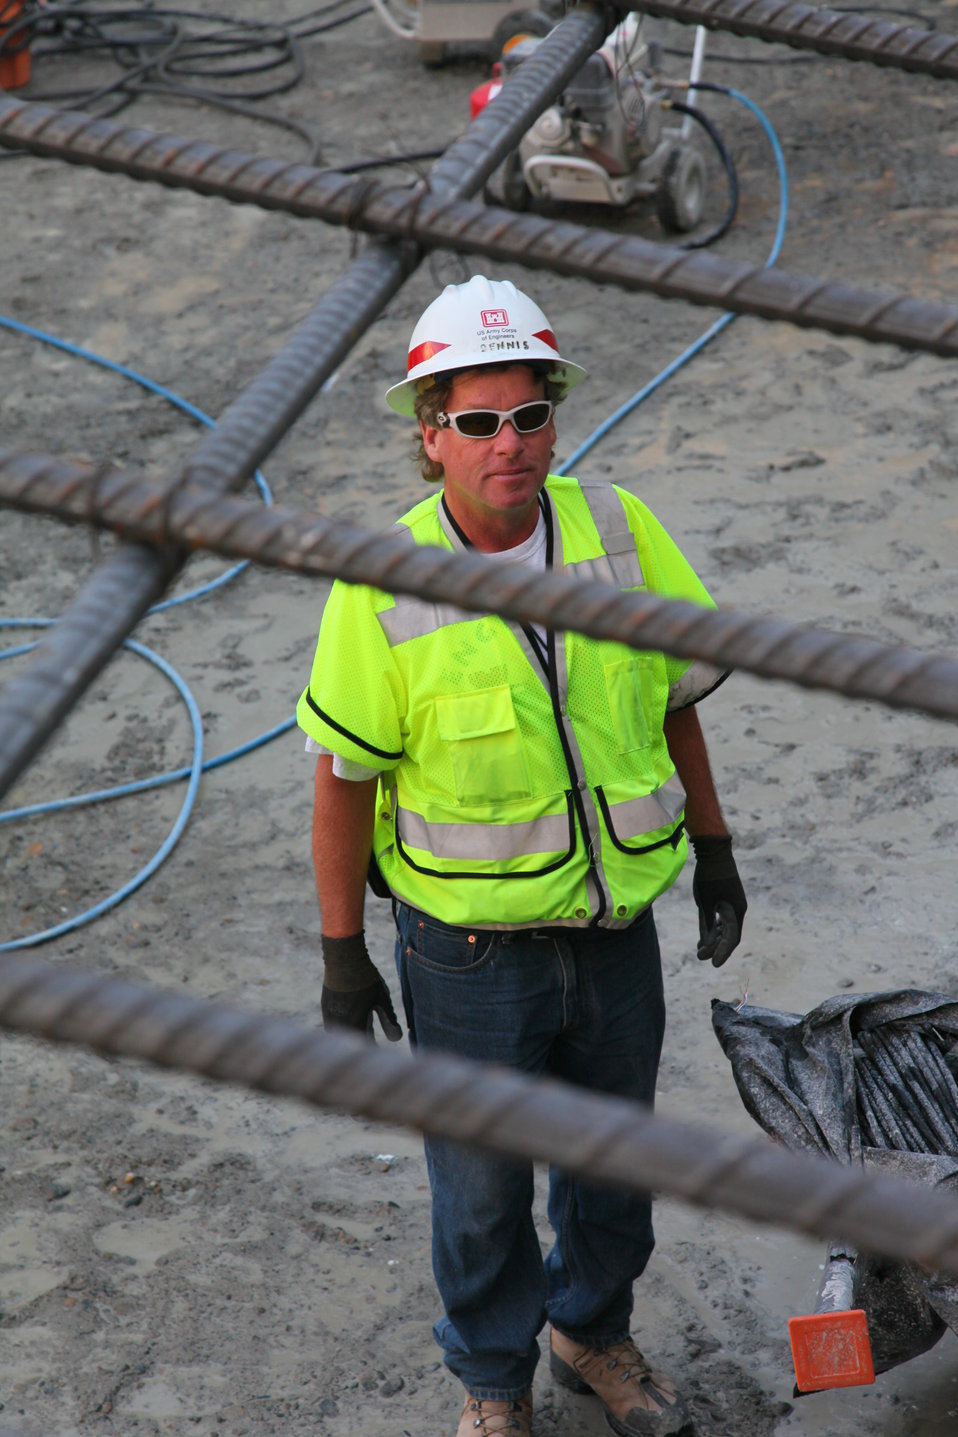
Rebar before concrete

Looking up in a maze of a steel rebar, Dennis Griffin, a construction representative with the U.S. Army Corps of Engineers Sacramento District, examines the support system for concrete placement for the auxiliary spillway at the Folsom Dam Joint Federal Project in Folsom, Calif., June 14, 2012. The Folsom Dam Joint Federal Project is a joint effort of the Corps, U. S. Bureau of Reclamation, the Central Valley Flood Protection Board and the Sacramento Area Flood Control Agency to improve the safety of the current dam and reduce flood risk for the greater Sacramento area.